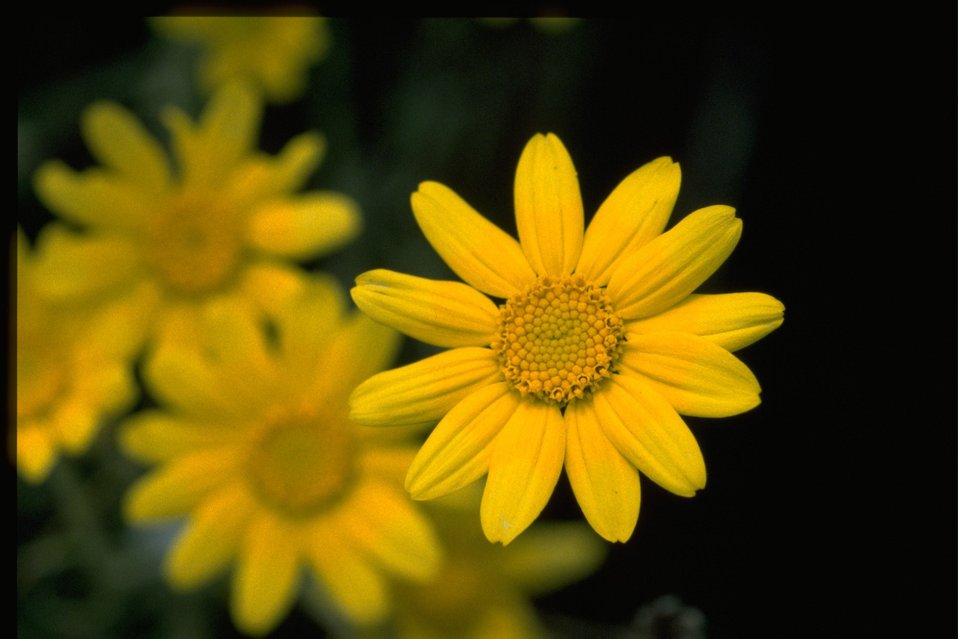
Closeup shot of Eriophyllum lanatum.